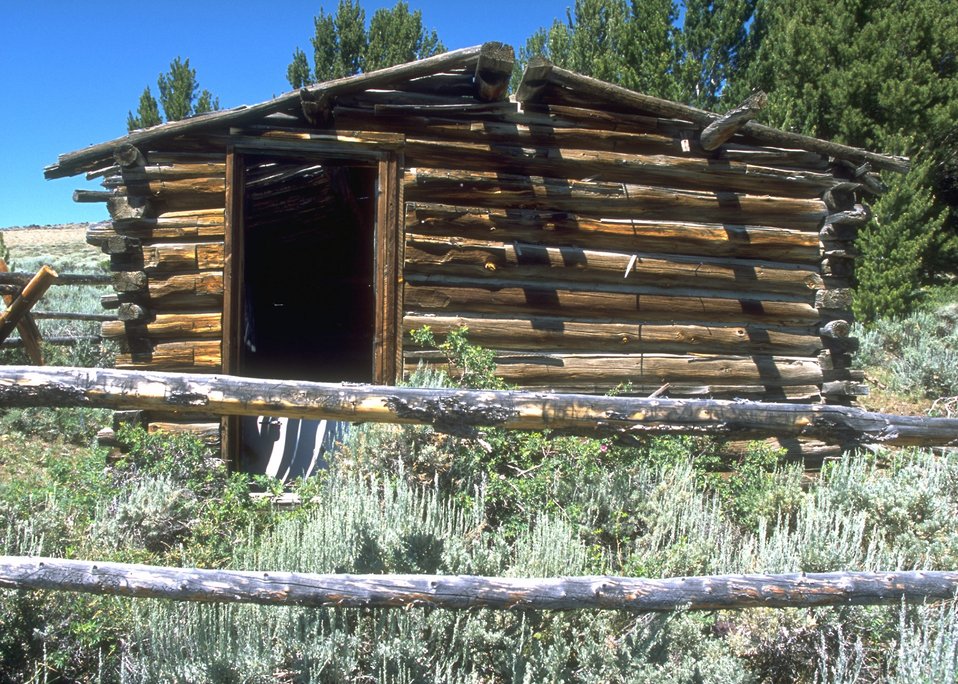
Cabin north of South Pass City along the Continental Divide Trail, Lander Field Office.